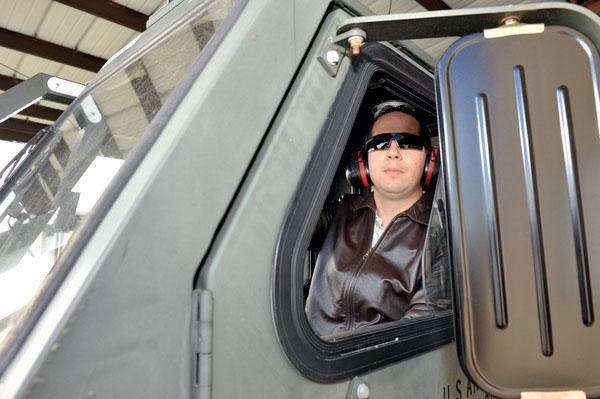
Wounded warrior program

Gunar Moschner, a former senior airman who was severely injured while deployed to Southwest Asia, now works with the 325th Mission Support Group at Tyndall Air Force Base, Fla. Using the Air Force's Wounded Warrior Employment Program, Mr. Moschner was able to obtain a job as an Air Force civilian, after he medically separated from the service.